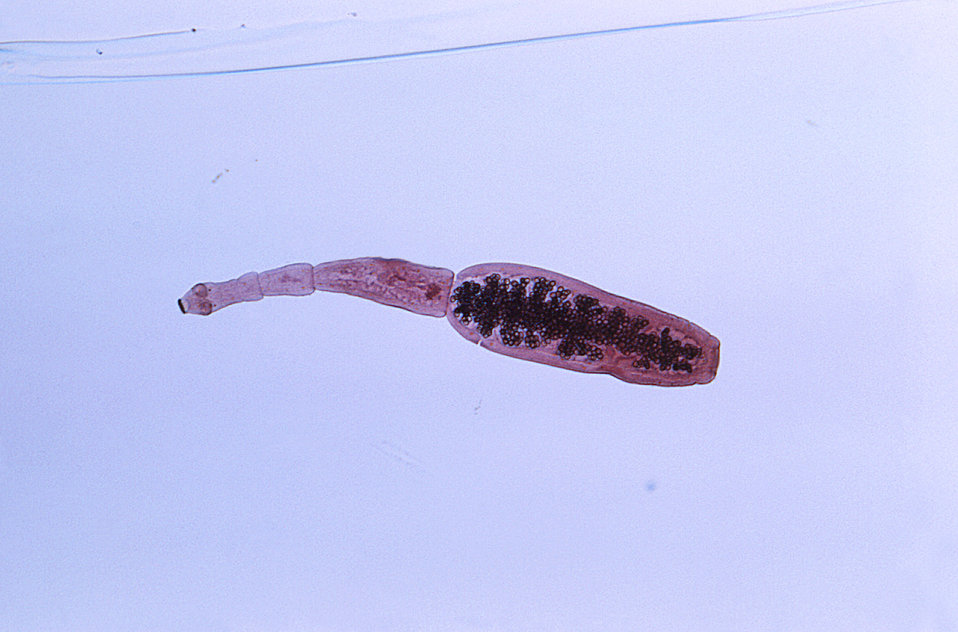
This photomicrograph revealed some of the ultrastructural morphology exhibited by an adult cestode, Echinococcus granulosus, which had been found in a dog. E. granulosus causes what is known as 'cystic echinococcosis'. As dogs and other canids are the only definitive hosts for Echinococcus, adults are not expected to be found in the human host. Adults range from 3mm - 6mm in length and usually consist of a scolex, and three proglottids. The third (terminal) proglottid is gravid, and is longer than wide, as can be seen in this instance. The scolex contains four suckers and a rostellum with 25 - 50 hooks.